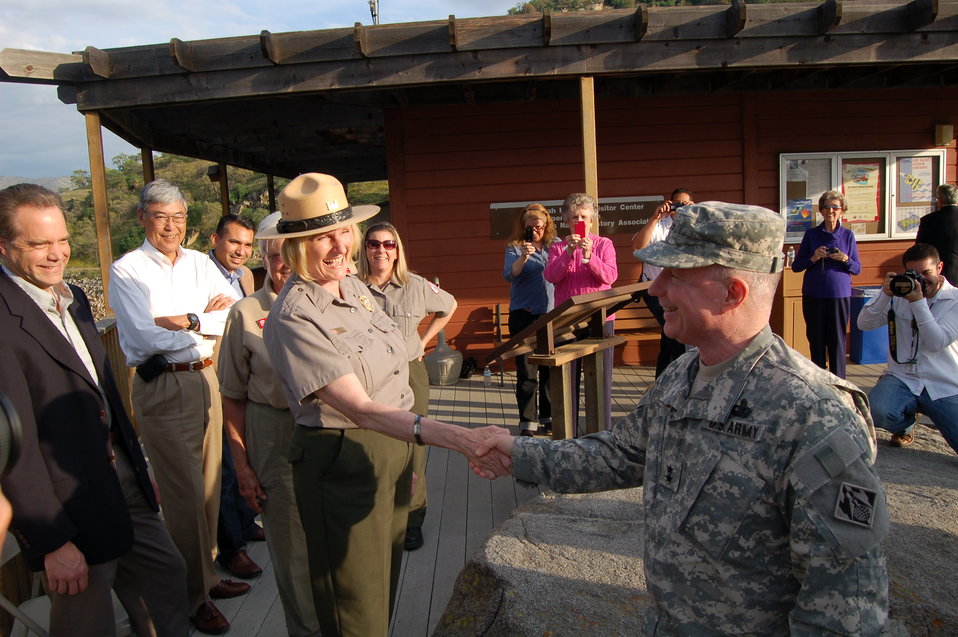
Sharing a mutual connection to WW I's Christmas Day Truce of 1914

Acting U.S. Army Chief of Engineers, Maj. Gen. Bo Temple (right), greets Valerie McKay, Sacramento District park ranger at Lake Kaweah, Calif., March 15, 2012. Temple added a stop on his California tour to Lake Kaweah’s visitors center to meet McKay after she responded to his holiday e-mail referencing the historic Christmas Day Truce of 1914. McKay’s late grandfather fought in World War I for the British and participated in the famous event, where British and German soldiers laid down their arms to sing and remember Christmas before resuming fighting.